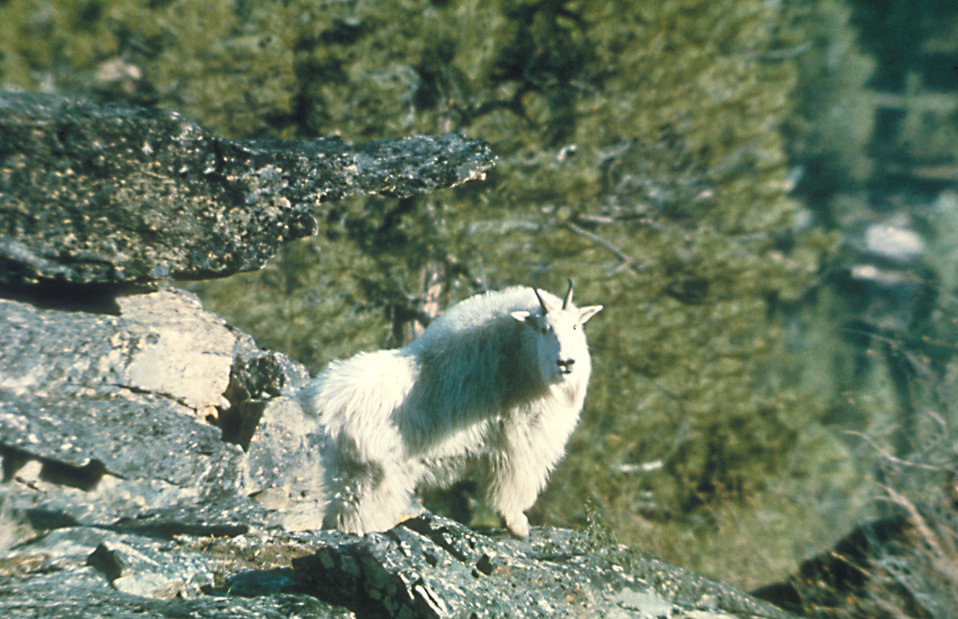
Rocky Mountain goat.